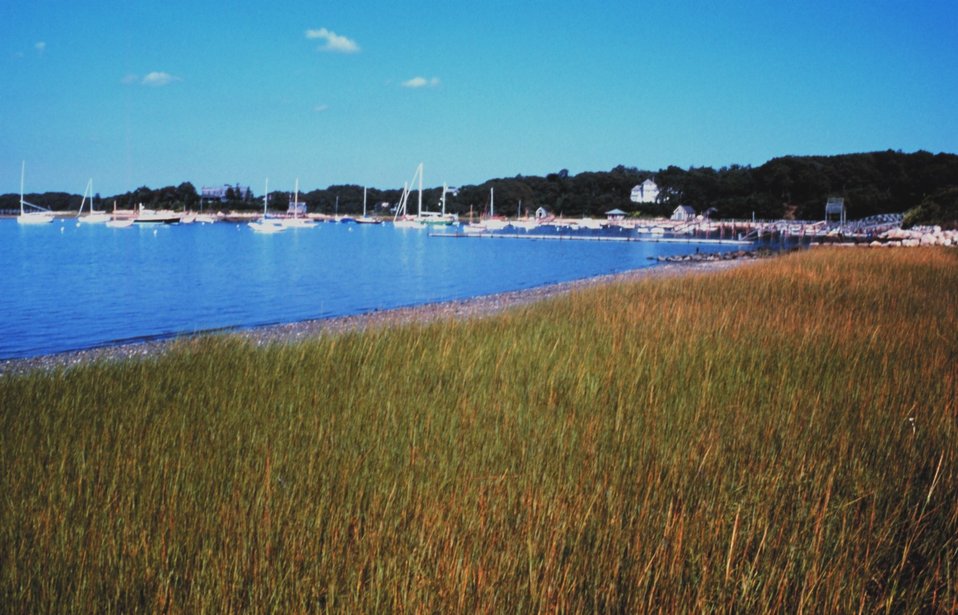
Buzzards Bay, North Falmouth